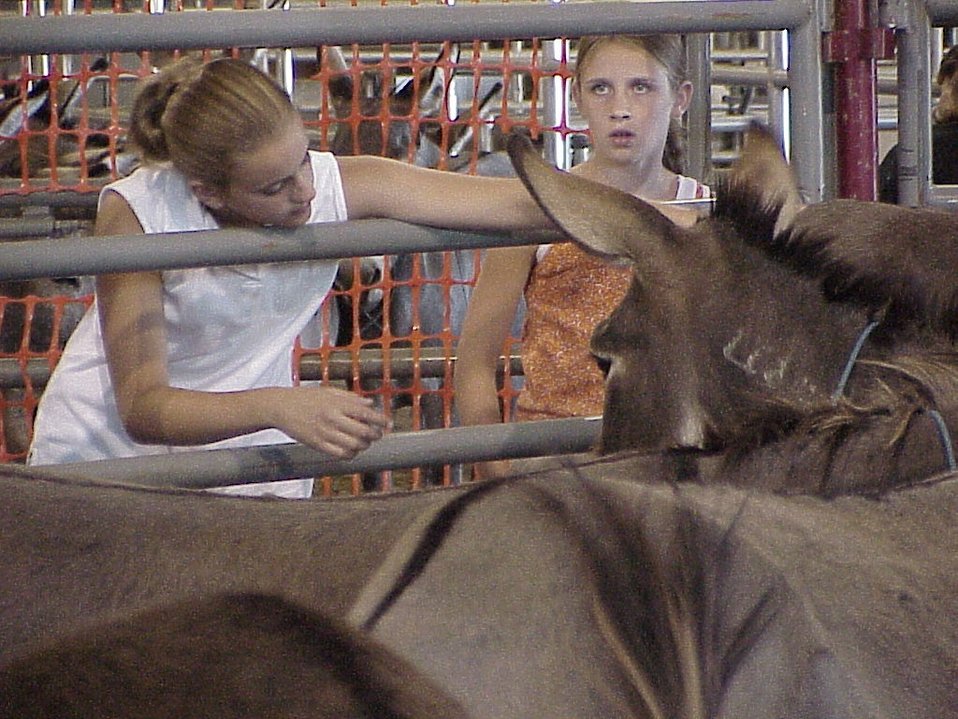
Lewiston Wild Horse and Burro Adoption Program Auction WHB indoor auction Cottonwood Field Office UCSC Upper Columbia Salmon Clearwater District